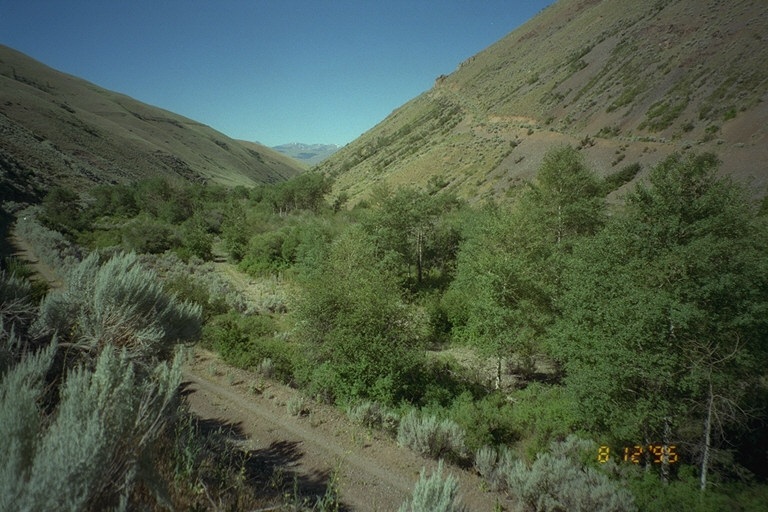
Riparian area Public Lands Salmon Field Office UCSC Upper Columbia Salmon Clearwater District